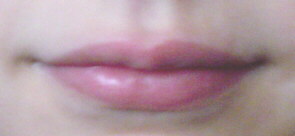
Sensual lips. Français : Les lèvres d'une femme qui est très sexy